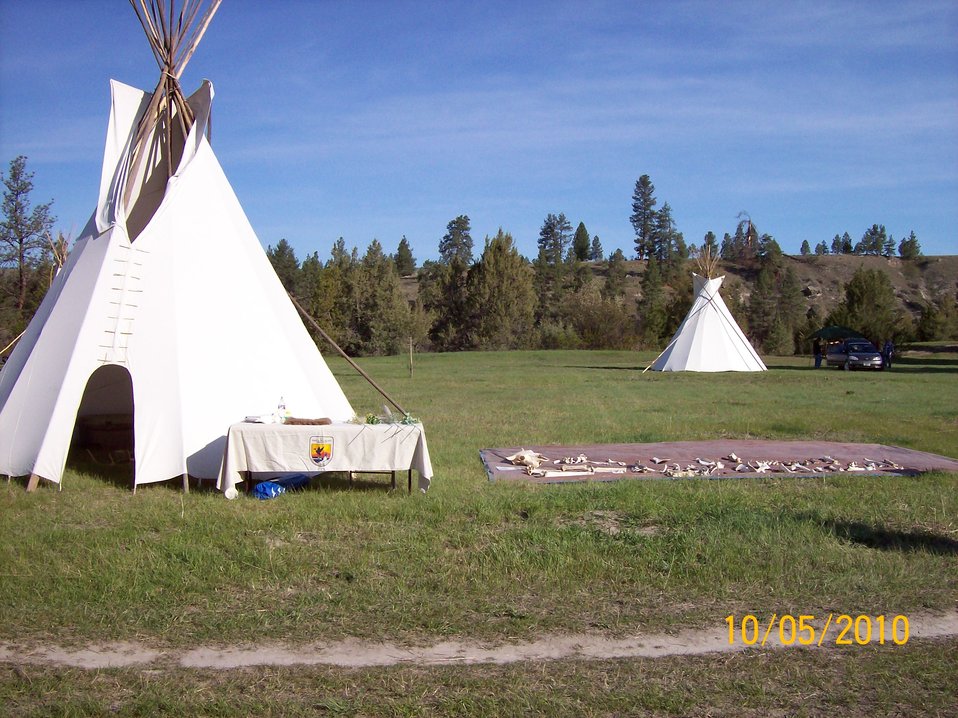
National Bison Range

River honoring on May 2010, hosted by the Confederated Salish and Kootenai Tribes. During this event (hosted at the National Bison Range), the guests were able to see bison skeletons and play educational games to learn all about bison! This event catered about 325 students.